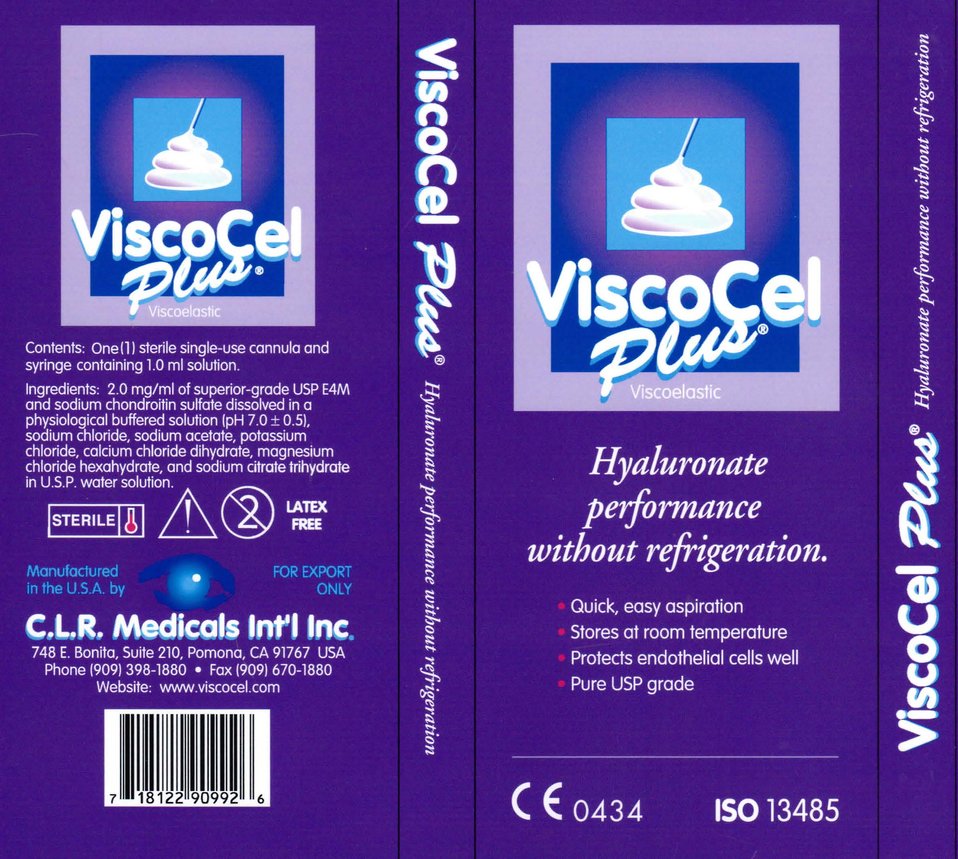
RECALLED – Viscocel and Viscocel Plus

November 25, 2013 – Product Recall –CLR Medicals International Inc. Issues Nationwide Recall of Viscoelastic Products.